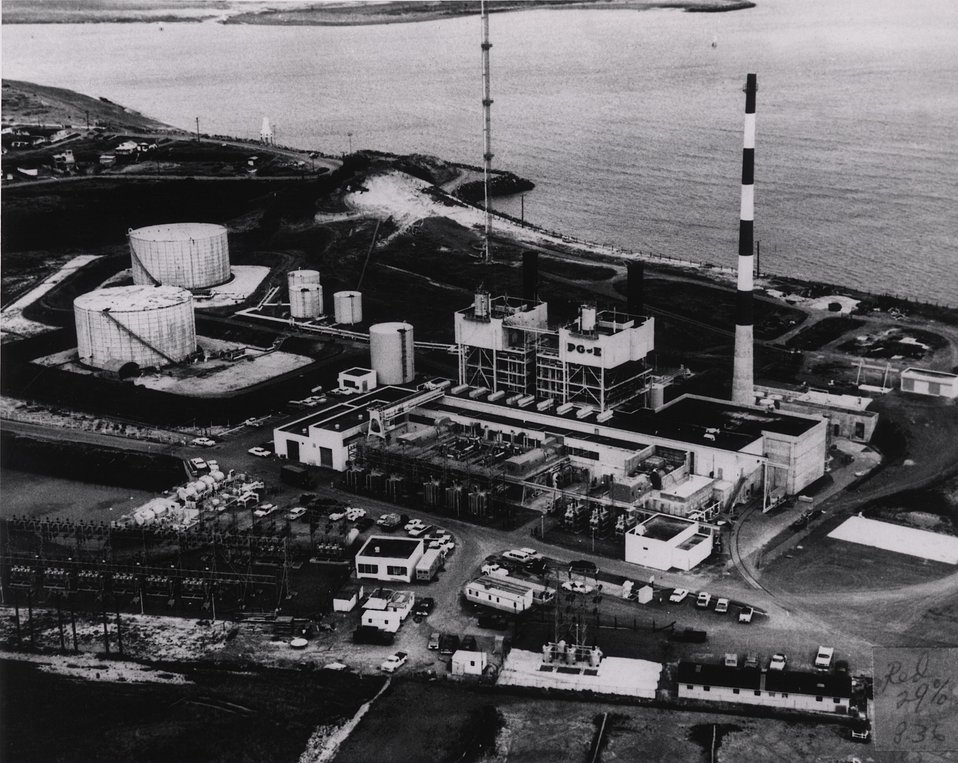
Humbolt Bay Nuclear Plant